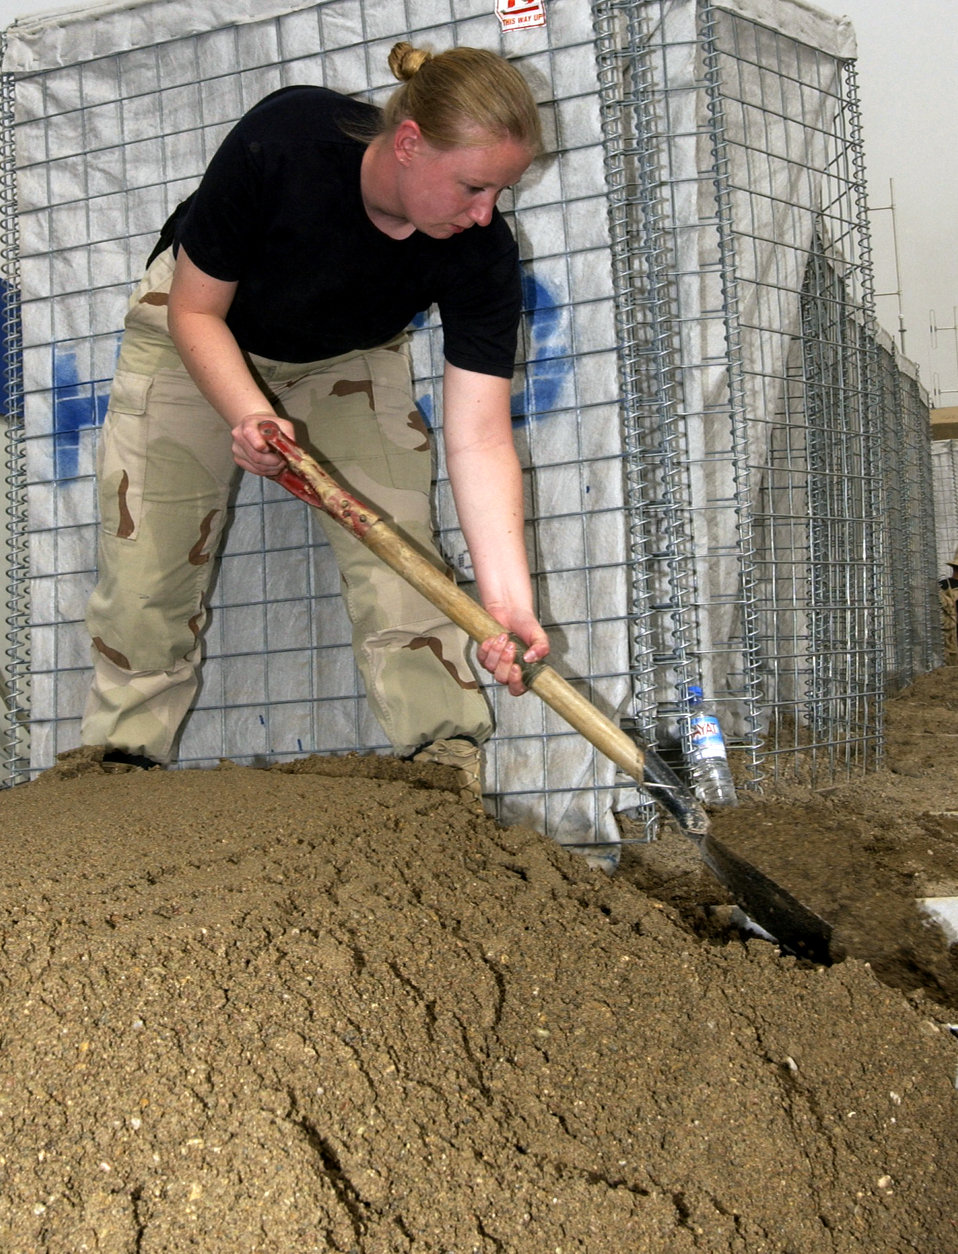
Barrier build

KIRKUK AIR BASE, Iraq -- Senior Airman Kristyn Reeves levels dirt in an expandable barrier at the communications compound here April 27. The barriers are being put up around the compound for protection against an enemy attack. Airman Reeves is assigned to the 506th Expeditionary Communications Squadron